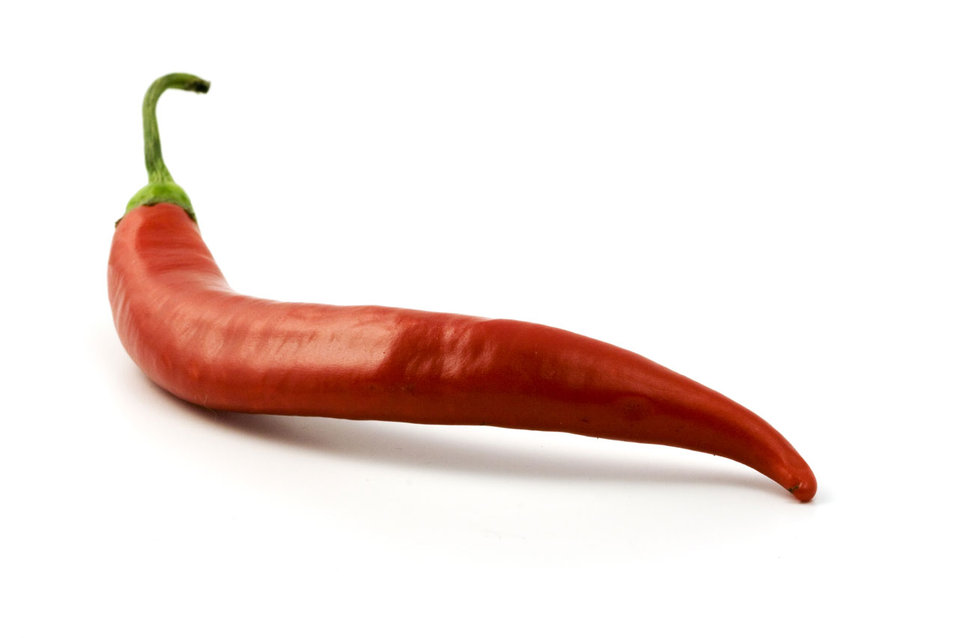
Red hot chilli pepper on white background.